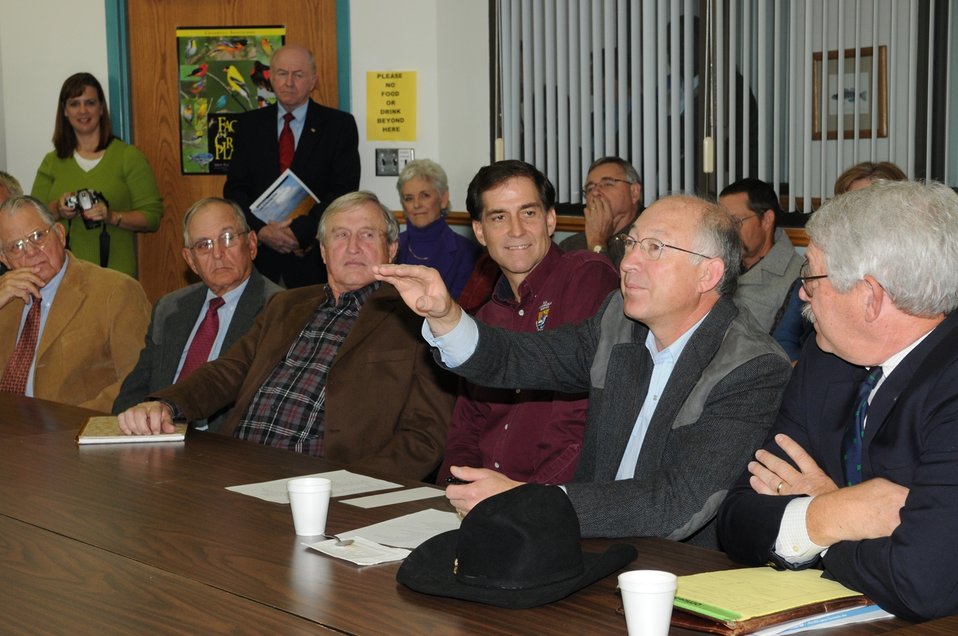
The Conservation Principals Meeting in Progress